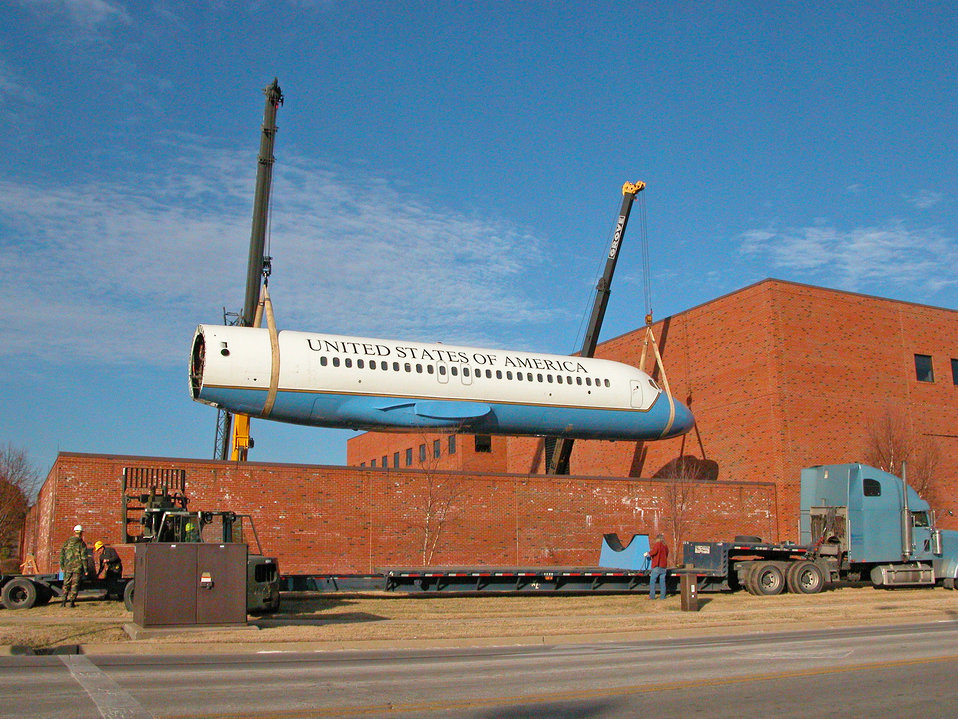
Air Force gets new lab for testing airborne networking

SCOTT AIR FORCE BASE, Ill. -- A DC-9 fuselage is suspended while people begin removing the stands from the truck to place them inside an Air Force Communications Agency compound where the fuselage will rest.